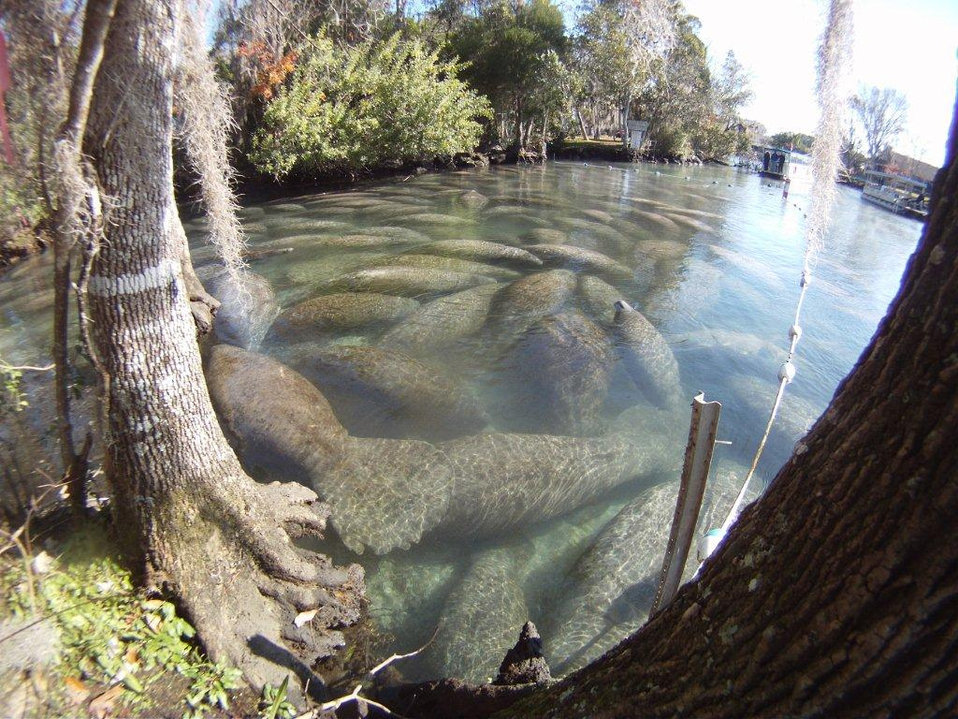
Endangered Florida manatee (Trichechus manatus), Crystal River National Wildlife Refuge

The Crystal River National Wildlife Refuge, was established in 1983 specifically for the protection of the endangered West Indian Manatee. This unique refuge preserves the last unspoiled and undeveloped habitat in Kings Bay, which forms the headwaters of the Crystal River. The refuge preserves the warm water spring havens, which provide critical habitat for the manatee populations that migrate here each winter.